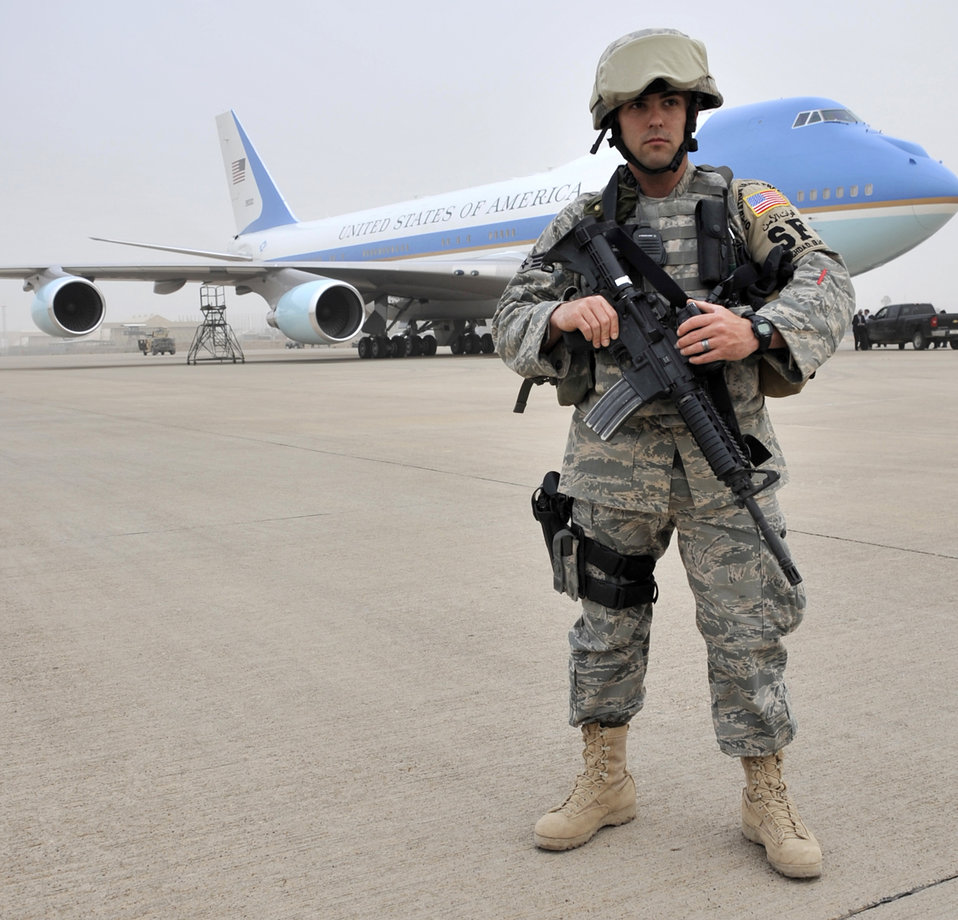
President Obama visits Sather

Staff Sgt. Matthew Smith guards Air Force One on the flightline April 7 at Sather Air Base, Iraq. President Barack Obama spoke to a crowd of nearly 1,500 servicemembers, government civilians and contractors at Al Faw Palace at Camp Victory, Iraq, during an unannounced visit to Iraq. The visit marked the president's first trip to Iraq since taking office. Sergeant Smith is a 447th Expeditionary Security Forces Squadron member.